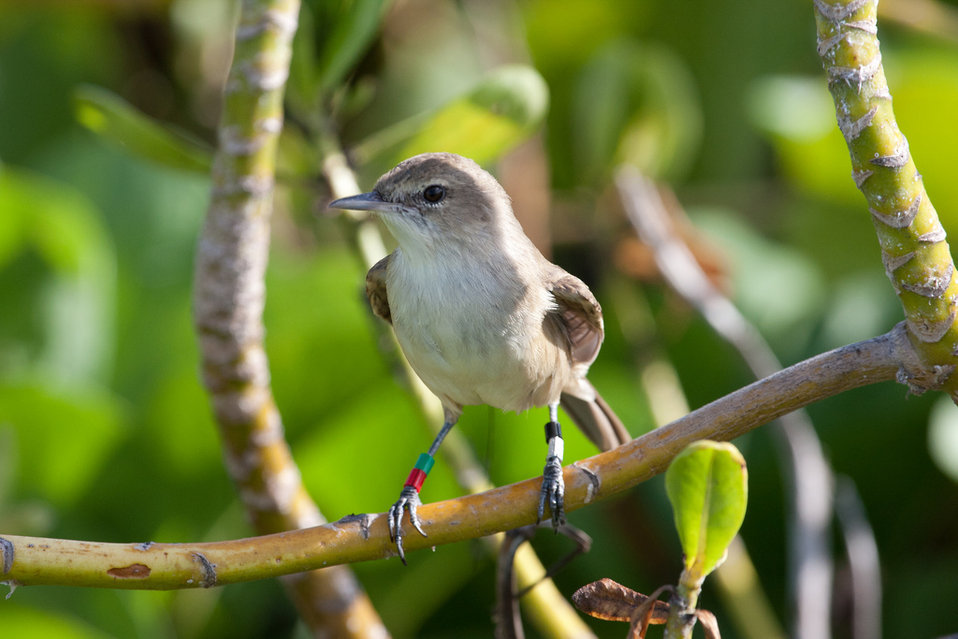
millerbird just after release

Laysan Island
Sept. 11, 2011